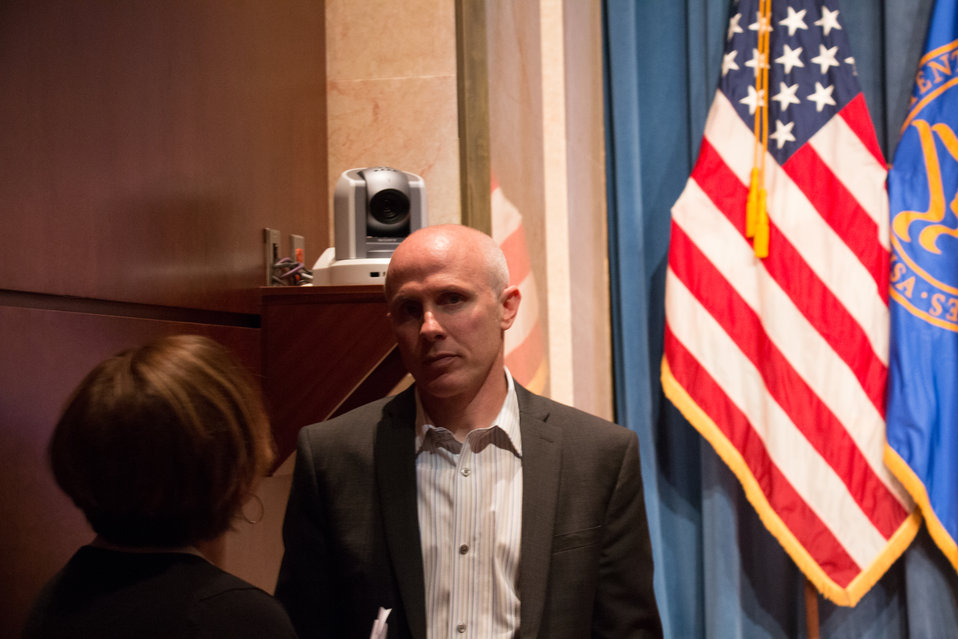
VHAP Launch (414 of 511)